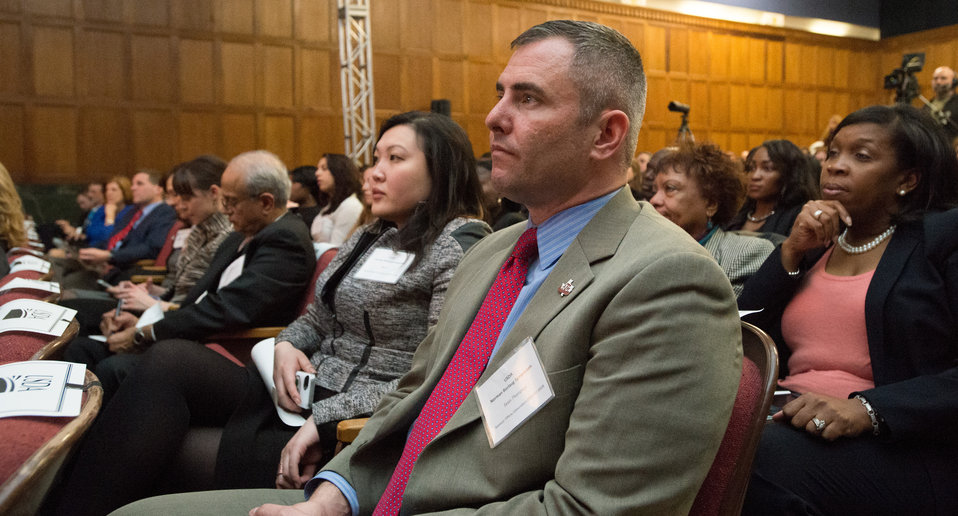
Texas A and M University Graduate Student Sean Thompson (center), World Food Prize’s Bian Li (center left) presenters, and University of Maryland – Eastern Shore students listen and take notes during the Borlaug Symposium commemorating the late Dr. Norman Borlaug's 100th Birthday in the Jefferson Auditorium of the U.S. Department of Agriculture (USDA) headquarters, in Washington, D.C. on Tuesday, Mar. 25, 2014. The symposium highlights current efforts addressing global hunger. Panels will feature high school and university students, as well as, scientists and policy advisors at U.S. Agency for International Development (USAID), USDA and Non-Governmental Organizations (NGO). Questions from students and interns are given priority to panelists. Lightening presentations will have leading students and individuals present what they are doing to help achieve Dr. Borlaug’s vision of creating the next generation of hunger fighters. The symposium was planned in partnership with: USAID, Cornell University, Iowa State University, University of Minnesota, The Norman Borlaug Institute for International Agriculture, Texas A and M University, and the World Food Prize.